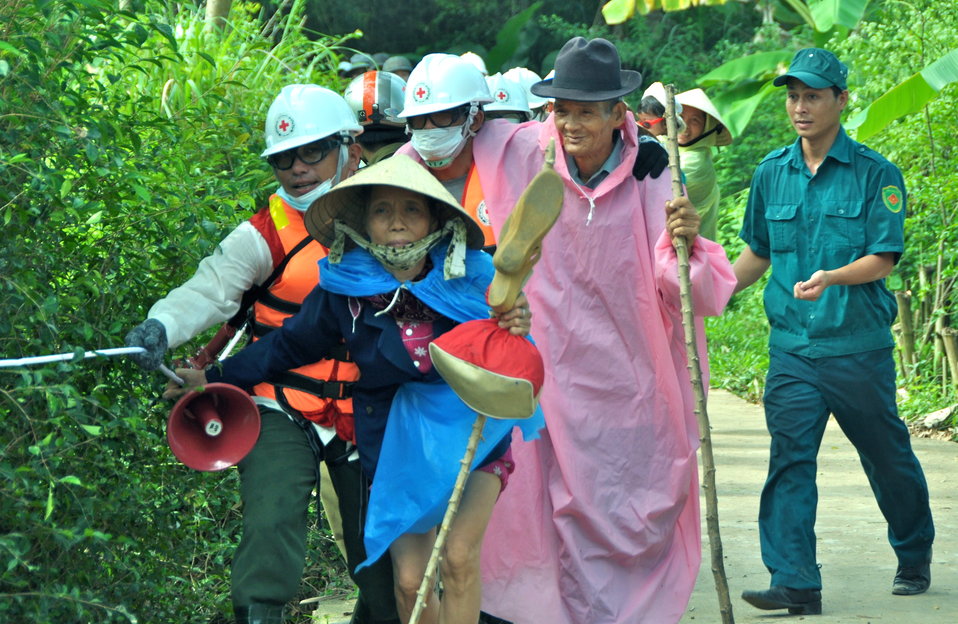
USAID, Red Cross Support Disaster Response Drill in Duy Hoa Commune, Quang Nam Province

Duy Hoa Commune, Quang Nam Province
December 5, 2012